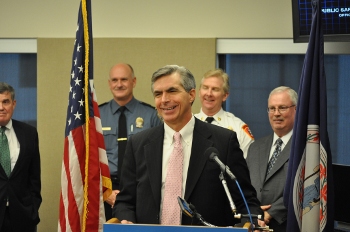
Next gen Jamie Barnett

Next Generation 9-1-1; Arlington, VA. November 23, 2010